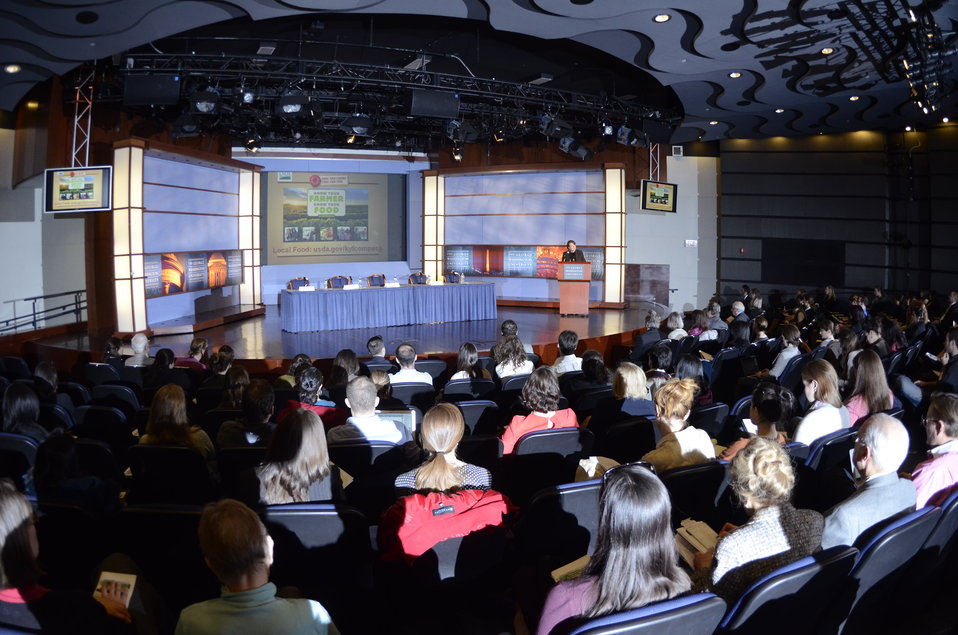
Agriculture Deputy Secretary Dr. Kathleen Merrigan keynote speaker 'Shaping the Farm Bill for a Sustainable Future.' Forum at The Trachtenberg School of Public Policy and Public Administration, George Washington University in Washington, D.C., on Thursday, March 1, 2012.